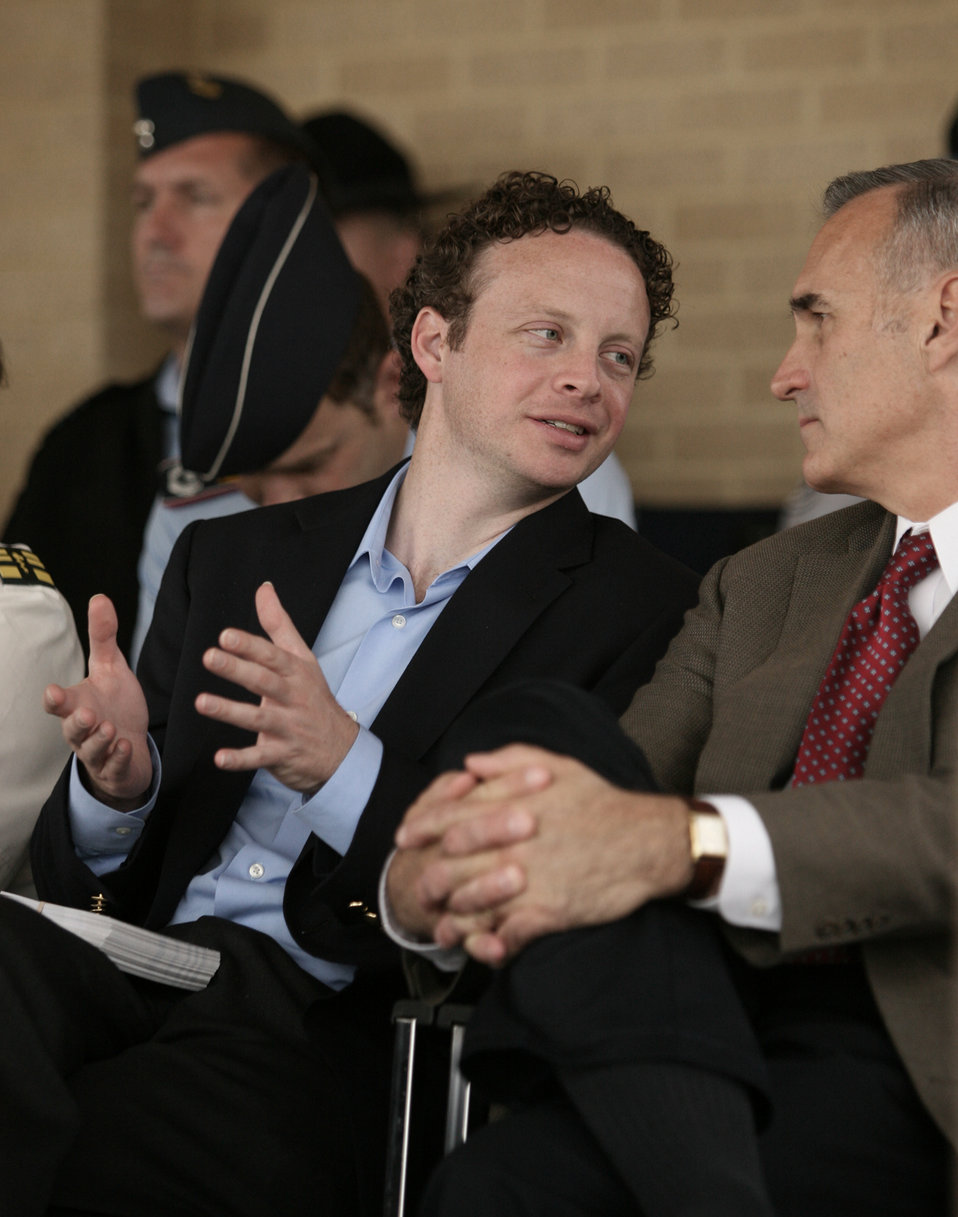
Filmmaker views Basic Military Training graduation up close

Filmmaker Jake Rademacher and Kirk Frady discuss Mr. Rademacher's experiences in Iraq while filming his documentary